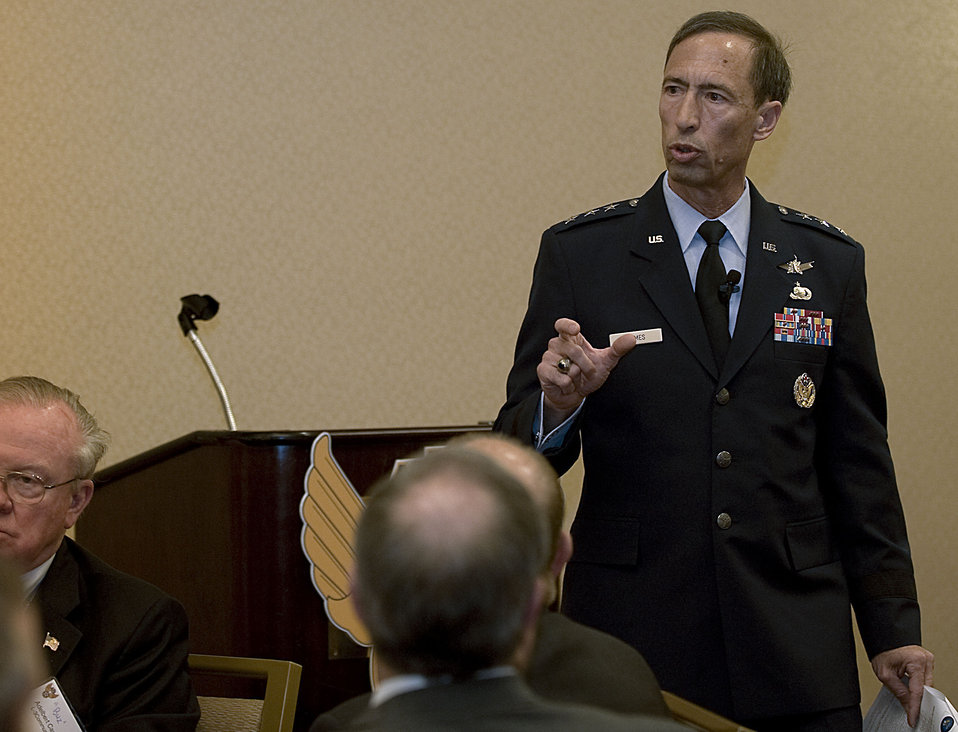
Air Force leader talks about future of ISR

Lt. Gen. Larry D. James spoke about how intelligence, surveillance and reconnaissance is done today and where it’s headed in the future April 26, 2012, during the Air Force Association breakfast at the Crystal City Marriott, Va. More than 20,000 Airmen work in ISR missions on a daily basis. Of that number, more than 1,000 are deployed across all combatant command areas executing joint-service missions. James is the deputy chief of staff for ISR at Headquarters Air Force.